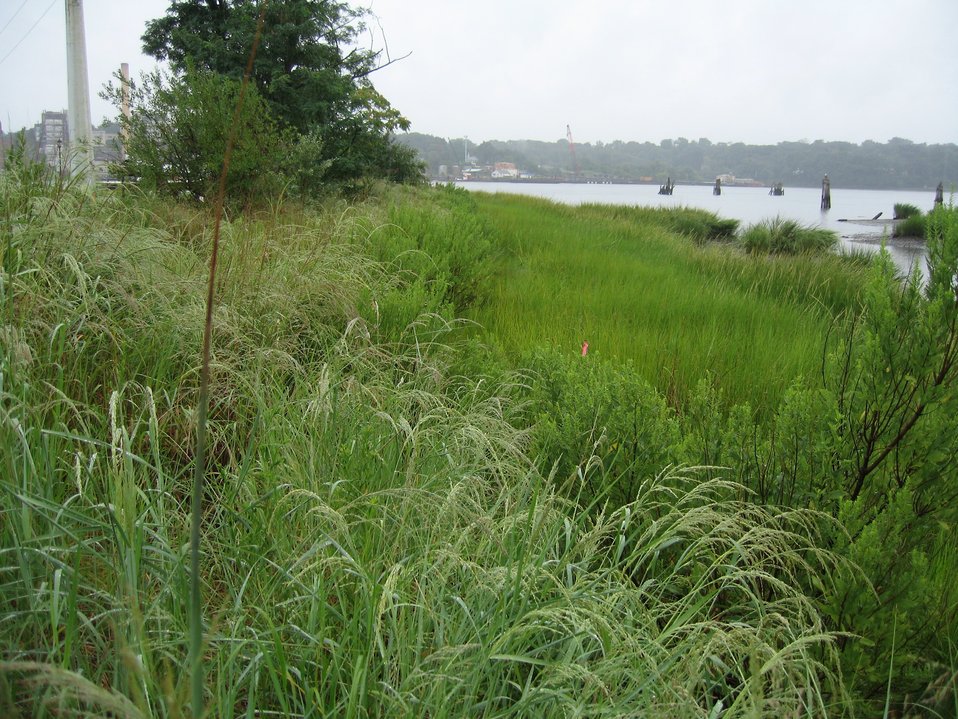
Restored shoreline at Hempstead Harbor. This area was designated a superfund site and was used as a petroleum and hazardous waste storage site from 1930 to the 1970s.